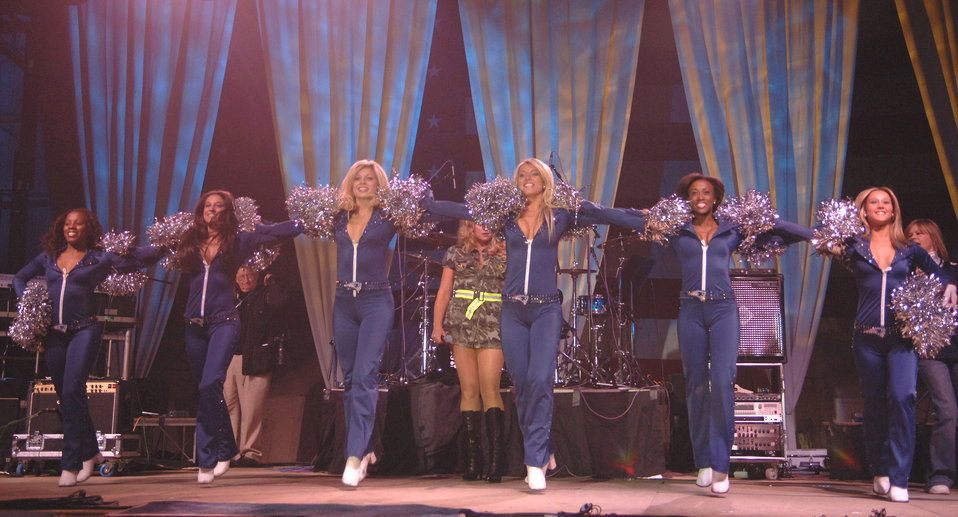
Performers bring holiday cheer to the 'Lik'

The New England Patriots cheerleaders show radio personality Delilah (back center) how to high-kick during the Operation Season's Greetings concert at Incirlik Air Base, Turkey, Nov. 22.